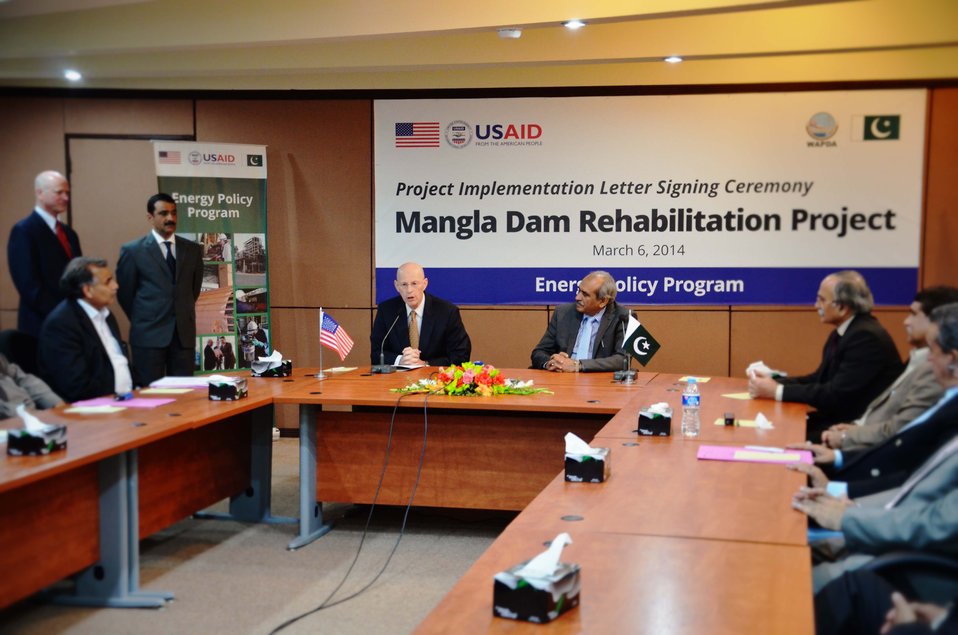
USAID Mission Director speaking at the signing ceremony